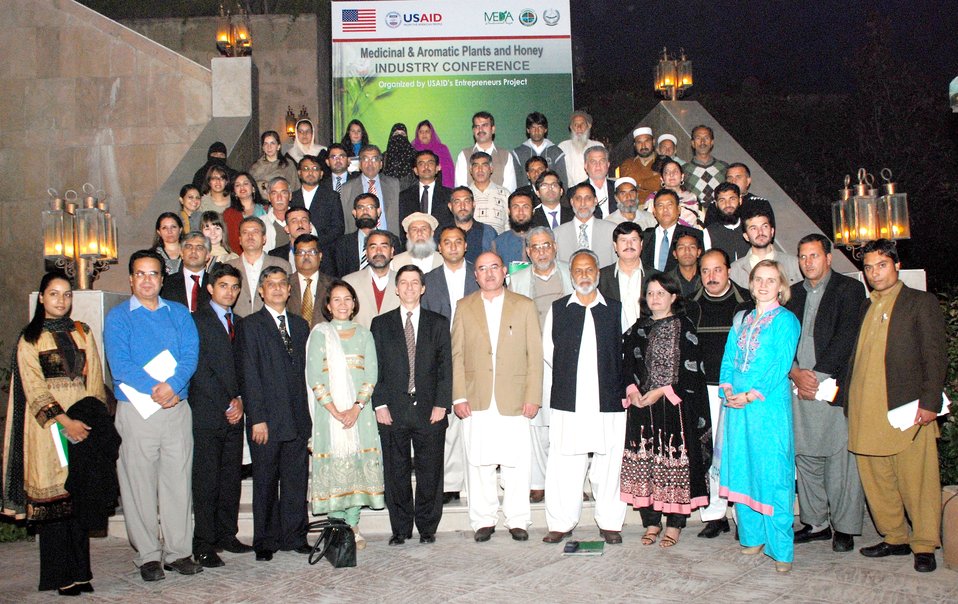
Industry Conference- Medicinal Plants and Honey

Group Photo of the Conference Participants